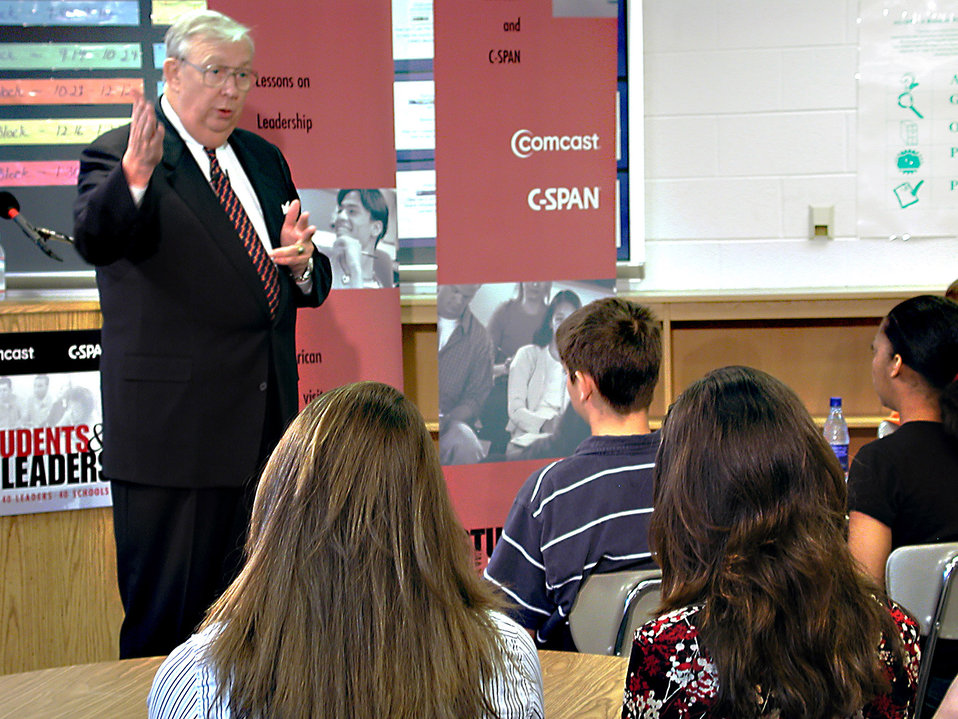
Roche visit

BETHESDA, Md. -- Secretary of the Air Force Dr. James G. Roche speaks to an eighth-grade history class here about leadership, the Air Force, public service and current events.